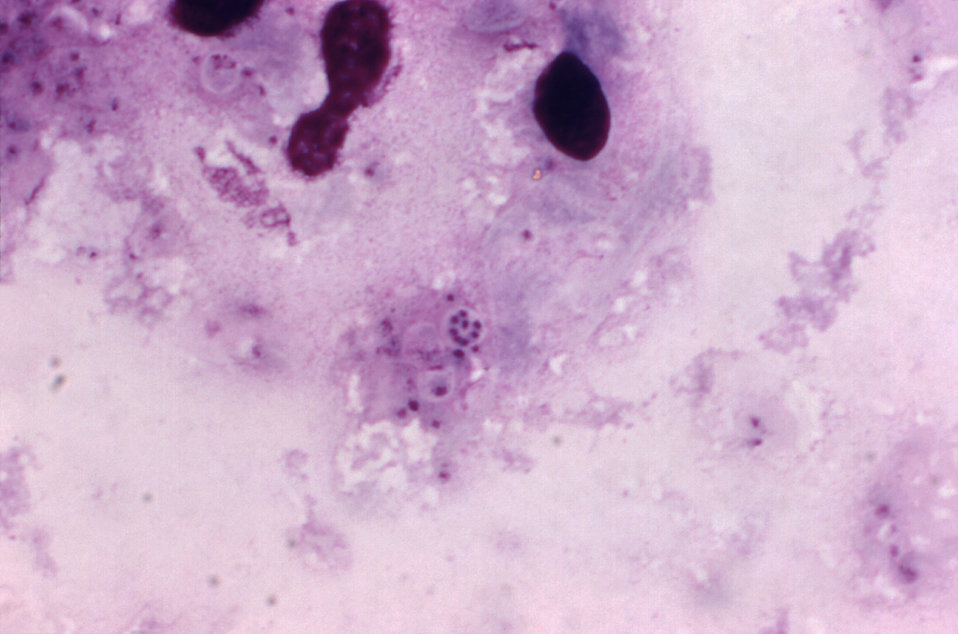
At a magnification of 1000X, this photomicrograph reveals Pneumocystis jirovecii fungi, which were present in this Giemsa-stained impression smear of rat lung tissue. Formerly known as Pneumocystis carinii, and classified as a protozoa, investigative tests upon this organism's nucleic acid and biochemical composition has since placed it in the Kingdom of Fungi.These fungi are found in the lungs of mammals where they reside without causing overt infection until the host's immune system becomes debilitated. Then, an oftentimes lethal pneumonia can result. Note the round cyst in the very middle of this image containing eight immature haploid neuclei, as well as numbers of freed trophozoites.